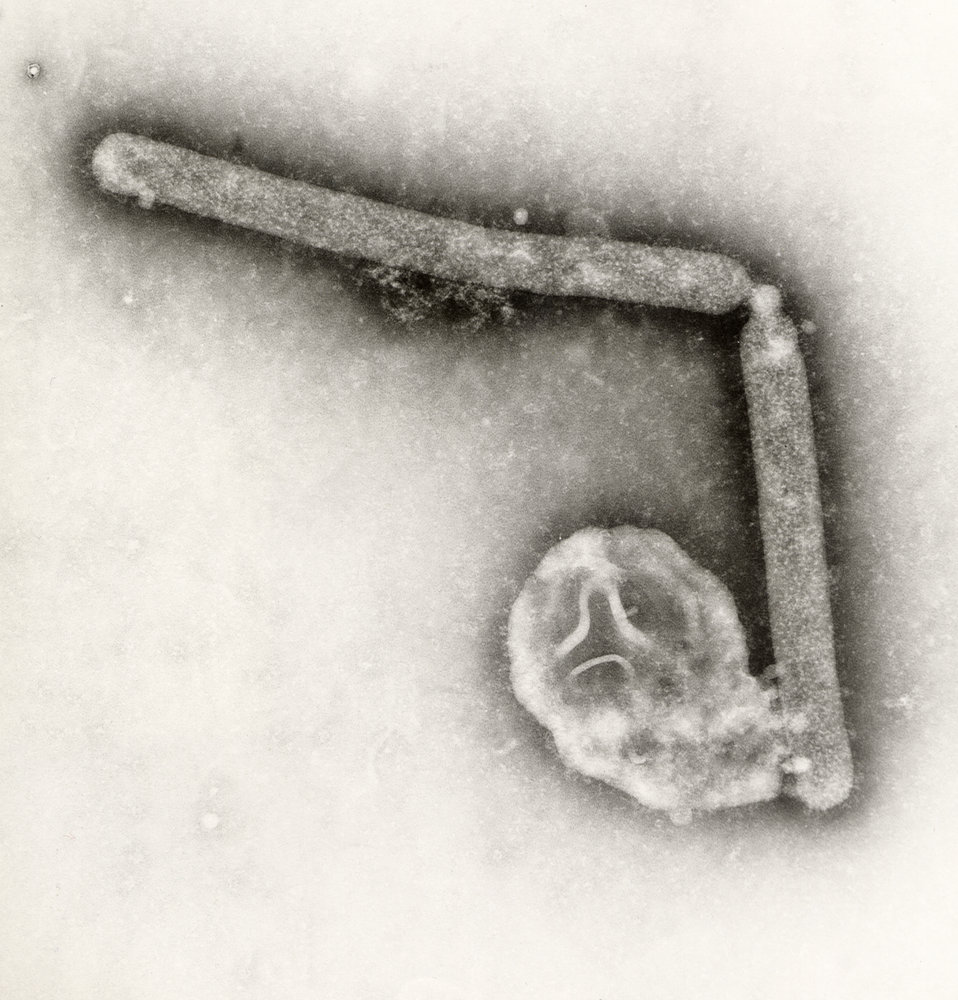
This transmission electron micrograph (TEM), taken at a magnification of 108,000x, revealed the ultrastructural details of two avian influenza A (H5N1) virions, a type of bird flu virus, which is a subtype of avian influenza A. At this magnification, one may note the stippled appearance of the roughened surface of the proteinaceous coat encasing each virion.